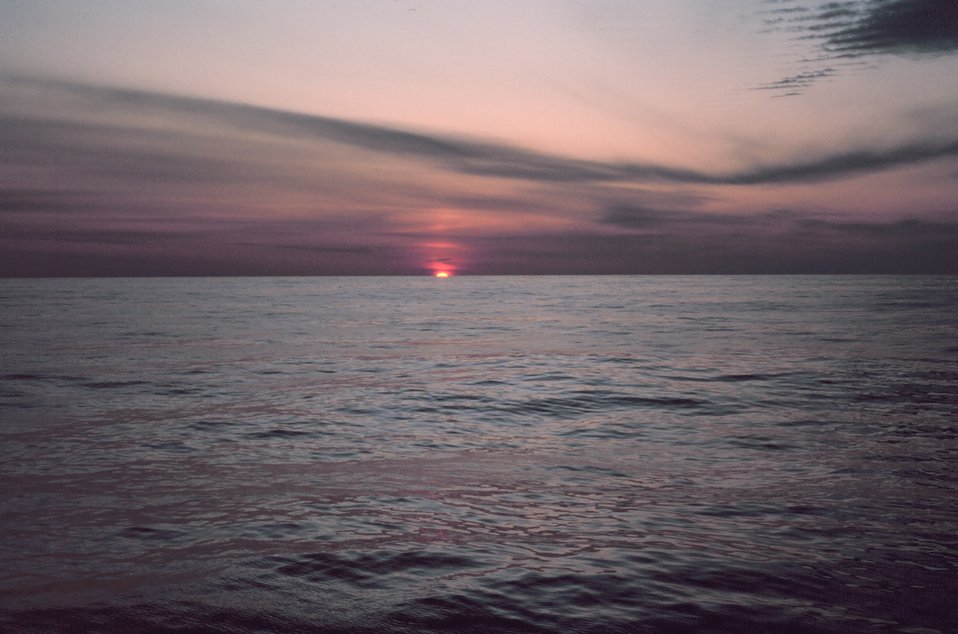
Sun peeking over the oceanic horizon at sunrise